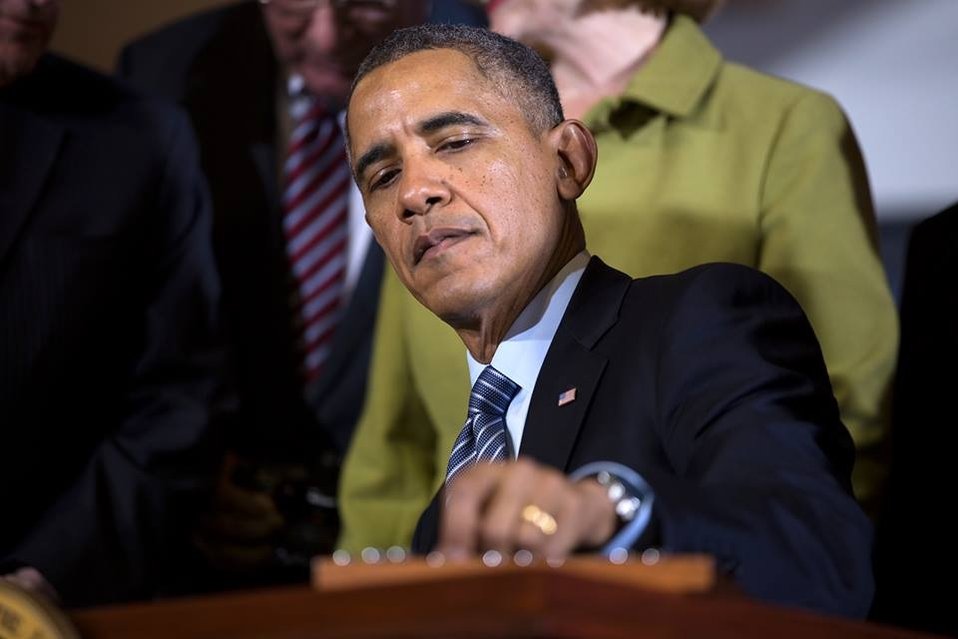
President Barack Obama signs the Agricultural Act of 2014 at Michigan State University in East Lansing, MI on Friday, Feb. 7, 2014. The President spoke on the importance of the act to America’s economy, detailing the progress over the last five years and how this bill will build on that progress.